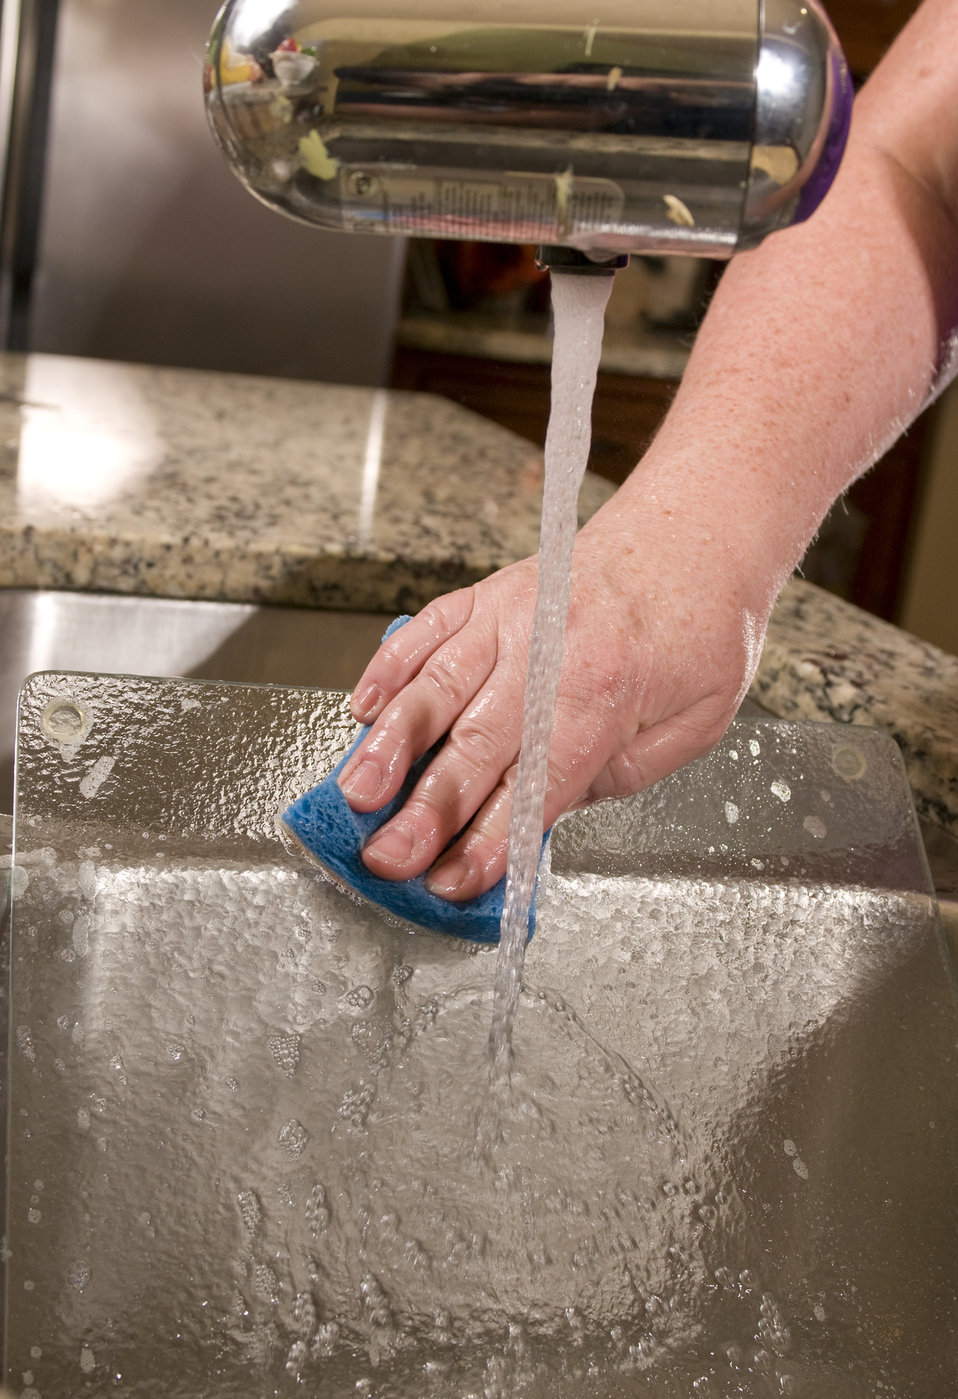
The woman pictured here, was in the process of cleaning a glass cutting board in her kitchen sink with a soapy sponge, and hot, fresh-running tap water, thereby, creating a setting appropriately sanitized prior to her preparation of foods, to be subsequently consumed by her, and her family It is very important to prepare foods in as clean environment as possible, thereby, minimizing the possibility of introducing foodborne contaminants into the food preparation process.